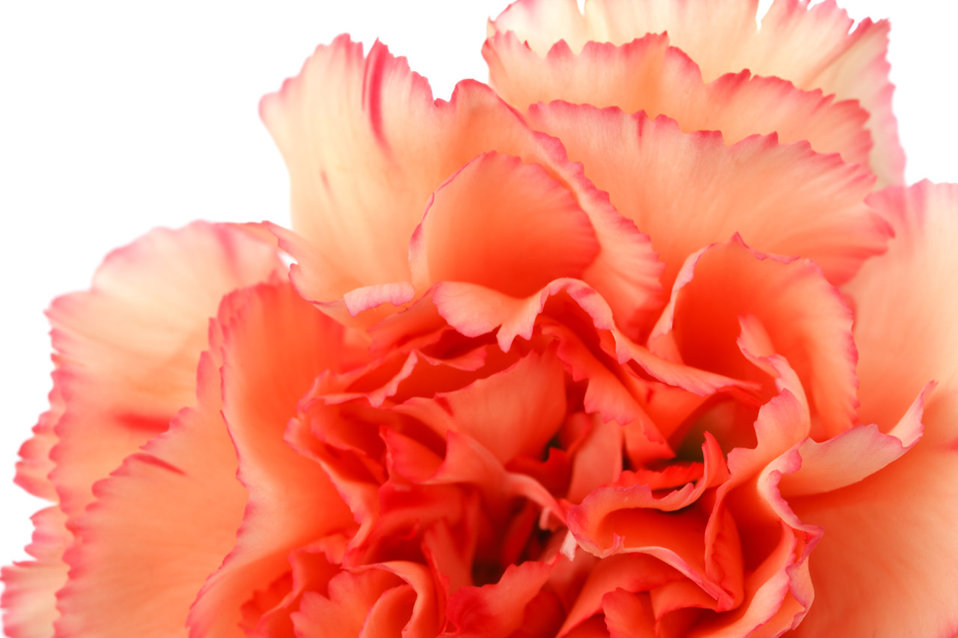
Orange carnation macro photo.